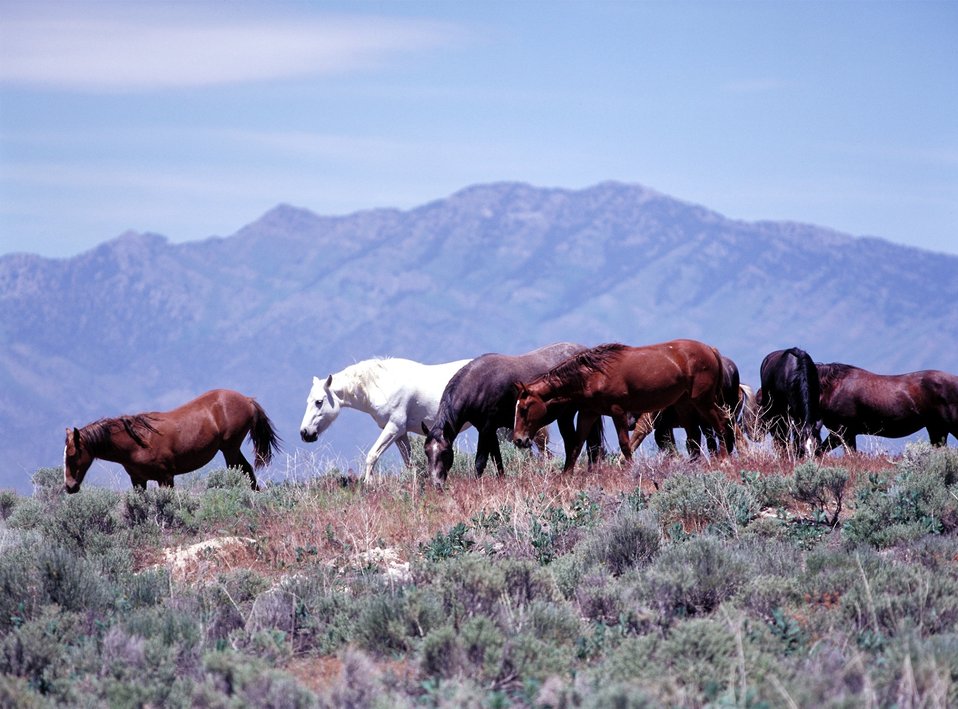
Onaqui Herd near Dugway, Utah.